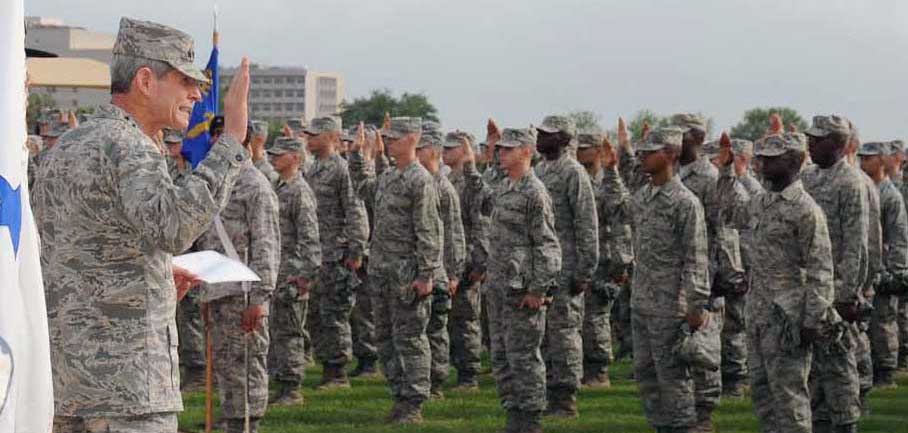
Year of the Air Force Family promotes sense of community

Air Force Chief of Staff Gen. Norton Schwartz officiates the oath of enlistment July 9, 2010, to graduates of Air Force Basic Military Training at Lackland Air Force Base, Texas.